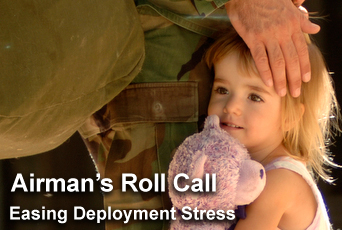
Airman's Roll Call

This week's Airman's Roll Call focuses on easing deployment stress through personal and family readiness.